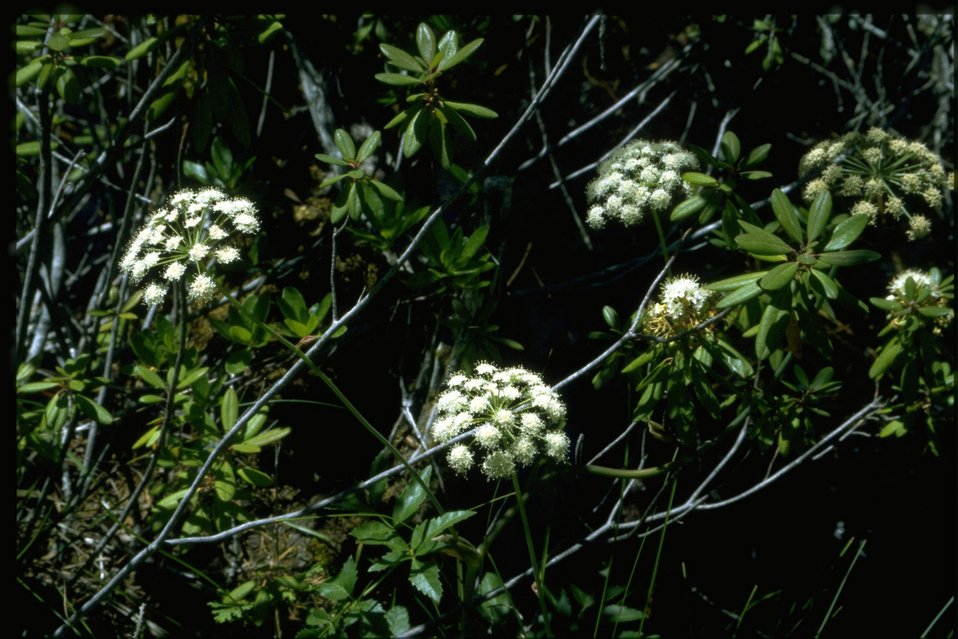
Medium shot of Cicuta douglasii.